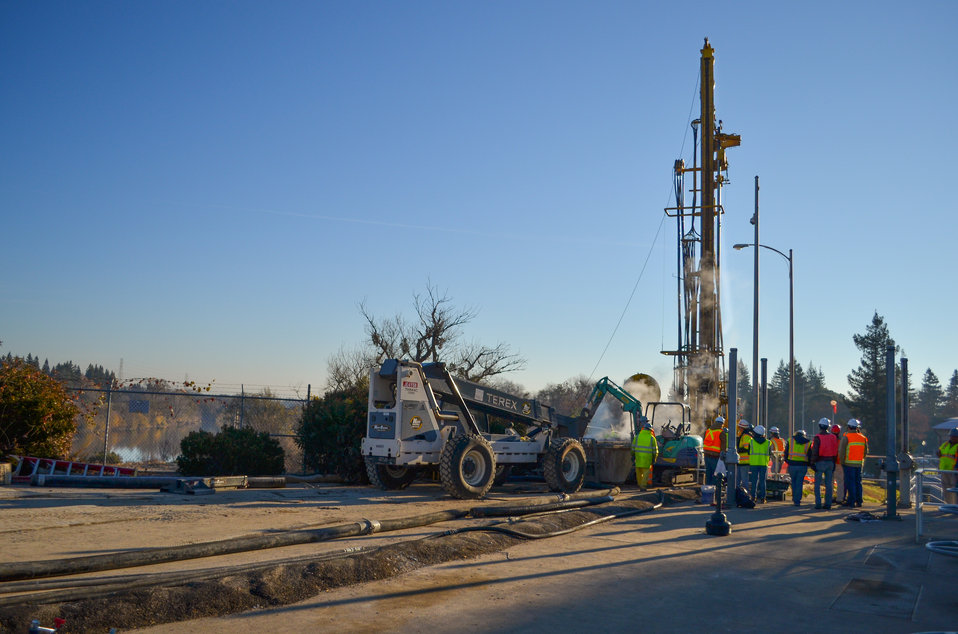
Jet grouting: a surgical approach to levee work

Crews operate a jet grout drill at a levee section along the American River in Sacramento, Calif., Dec. 11, 2013. This U.S. Army Corps of Engineers Sacramento District levee project at the E. A. Fairbairn Water Treatment Plant is using a precise construction method called jet grouting to inject a seepage cutoff wall around the plant’s buried utilities. The Corps installed more than 20 miles of seepage cutoff walls into American River levees between 2000 and 2002, but work was set aside for later where complicated encroachments existed such as utilities, power lines and bridges.